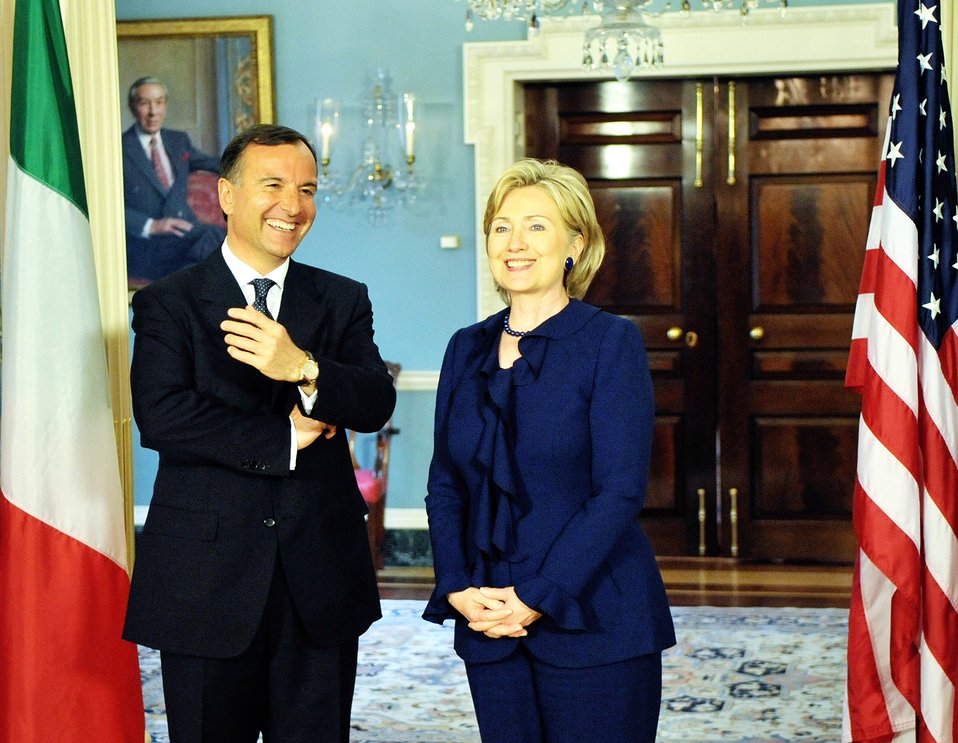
Secretary Clinton Meets With Italian Foreign Minister

U.S. Secretary of State Hillary Rodham Clinton hosts a bilateral meeting with Italian Foreign Minister Franco Frattini in the Treaty Room of the U.S. Department of State in Washington, DC May 7, 2009.